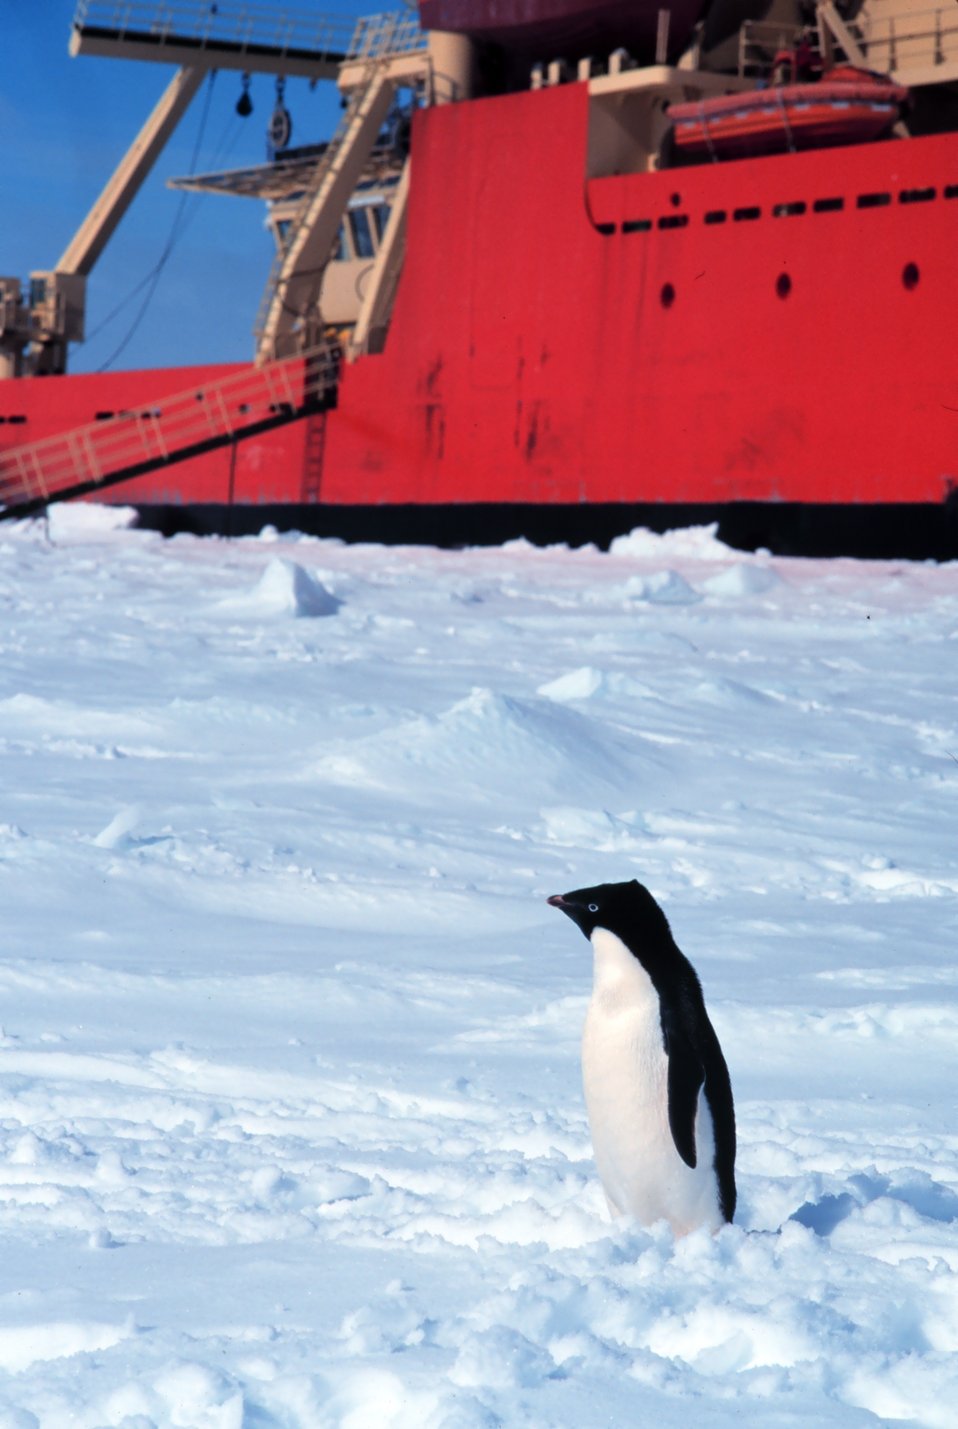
Adelie penguin posing in front of the National Science Foundation Research Ice Breaker NATHANIEL B. PALMER.